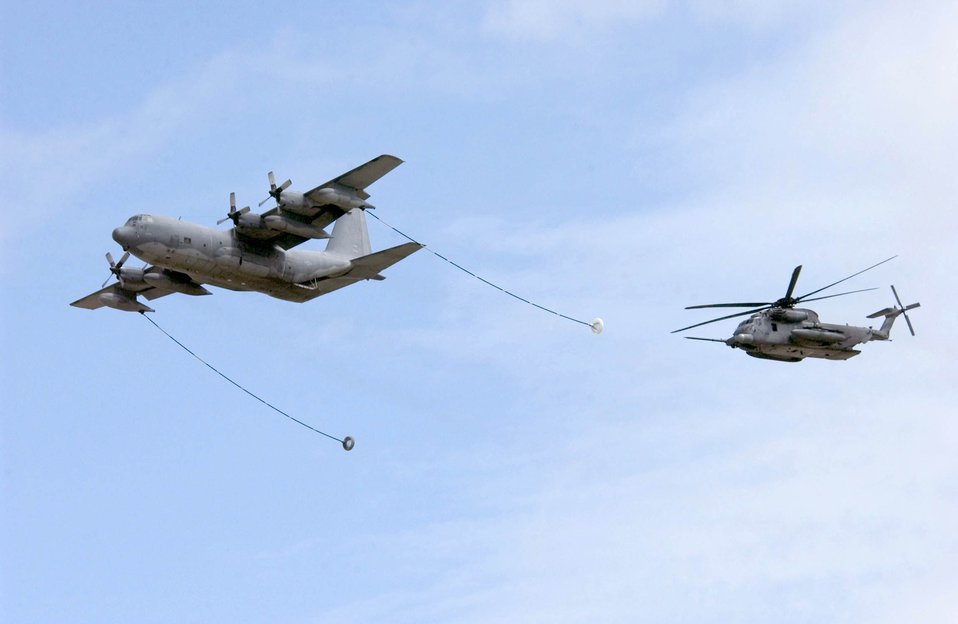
A revealing tattoo

OVER ROYAL AIR FORCE FAIRFORD, England -- An MC-130P Combat Shadow crew (left) demonstrates the aircraft's refueling capabilities using an MH-53 Pave Low helicopter during the Royal International Air Tattoo here July 16 to 18. More than 100,000 people visited the air show daily to see 350 aircraft from 15 nations and 30 different service branches.